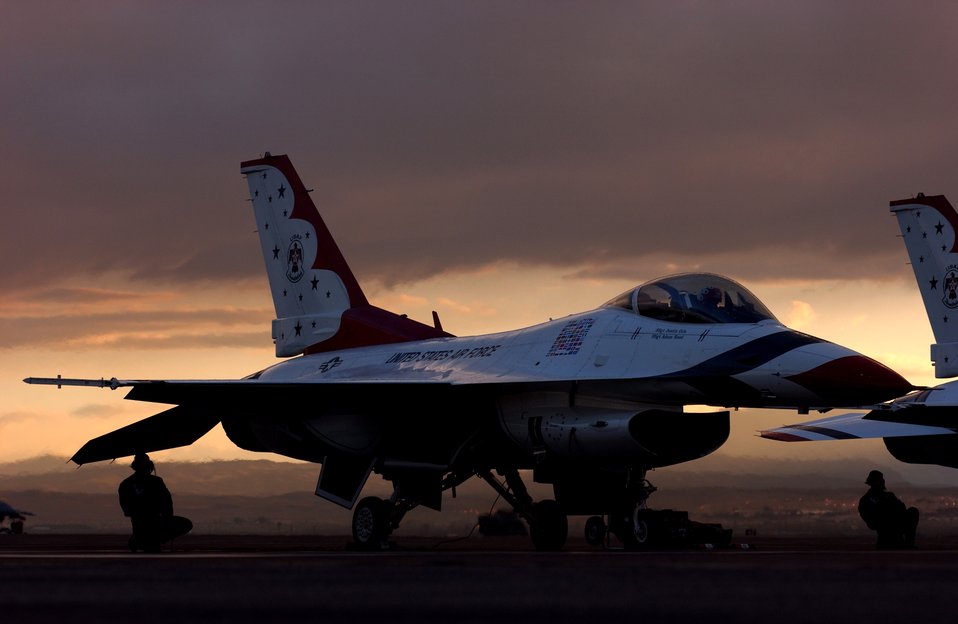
Sunrise launch

NELLIS AIR FORCE BASE, Nev. -- Crew chiefs with the United States Air Force Aerial Demonstration Squadron perch under the wing of "Thunderbird" F-16 Fighting Falcons here in the early morning light during a training launch. The Thunderbirds are still in training season gearing up for their show season beginning in early March and ending in late November.